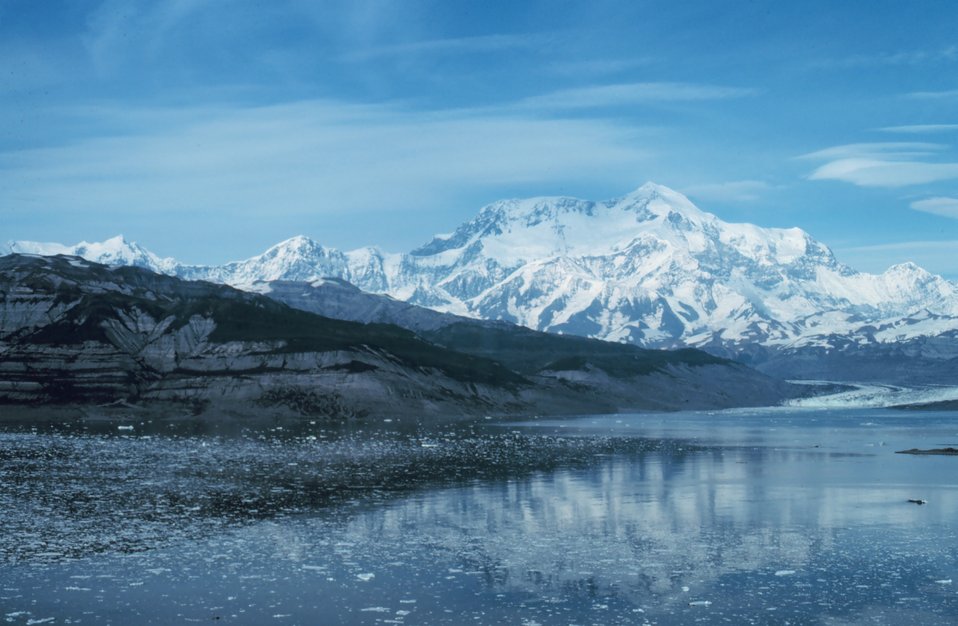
Icy Bay, Mt. St. Elias